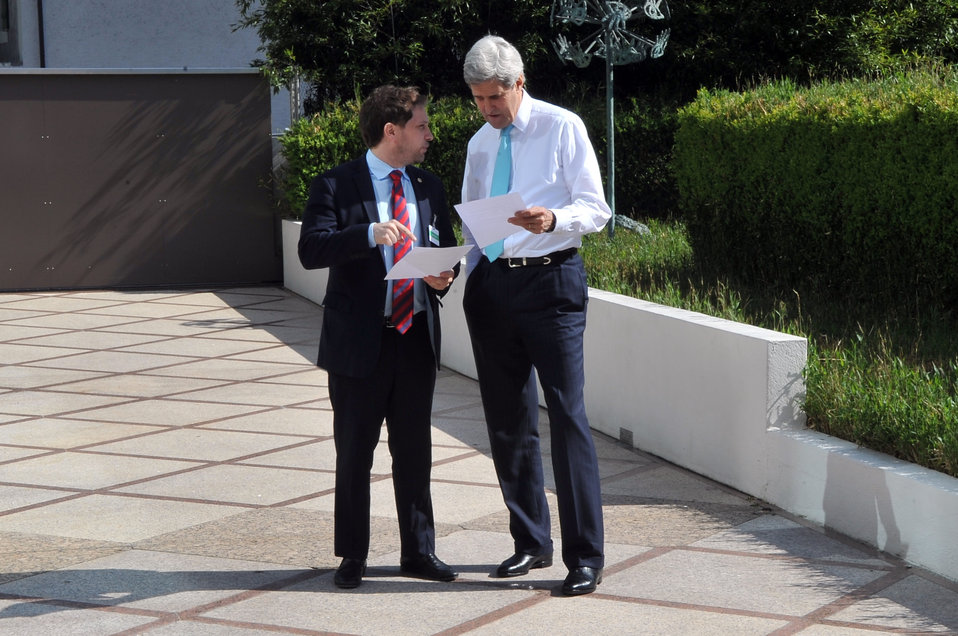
Secretary Kerry Confers With Deputy Chief of Staff Finer During Break in Ukraine Talks

U.S. Secretary of State John Kerry speaks with Deputy Chief of Staff Jon Finer during a break in meetings in Geneva, Switzerland, on April 17, 2014, with Russian, Ukrainian, and European Union officials about Ukraine.